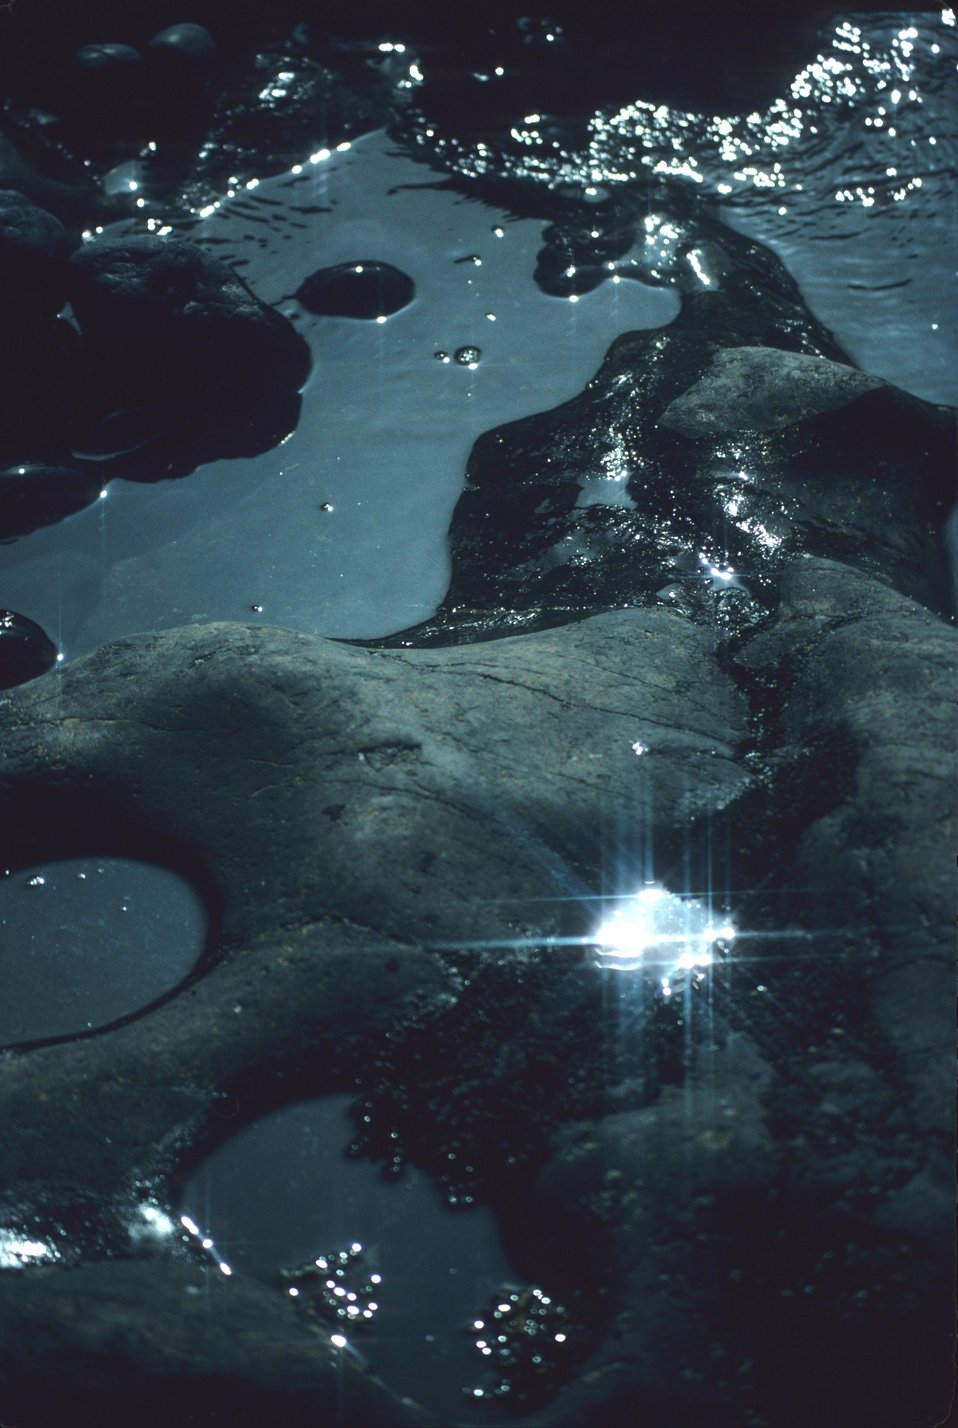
Light playing on a tide pool